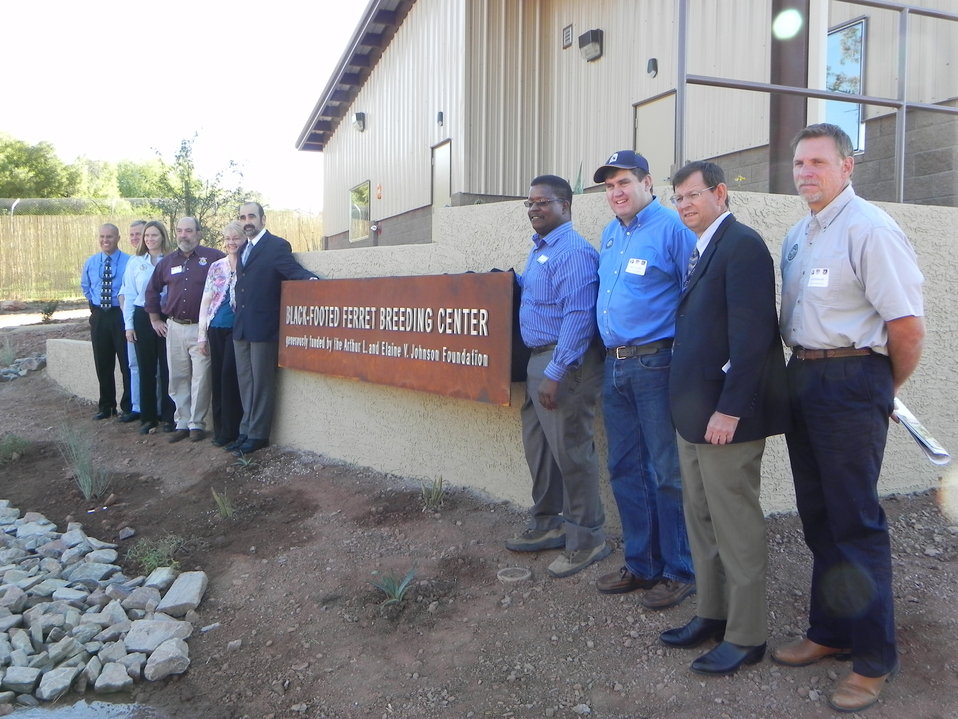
Dedication of Black-footed Ferret Breeding Center at the Phoenix Zoo 11/18/2010.